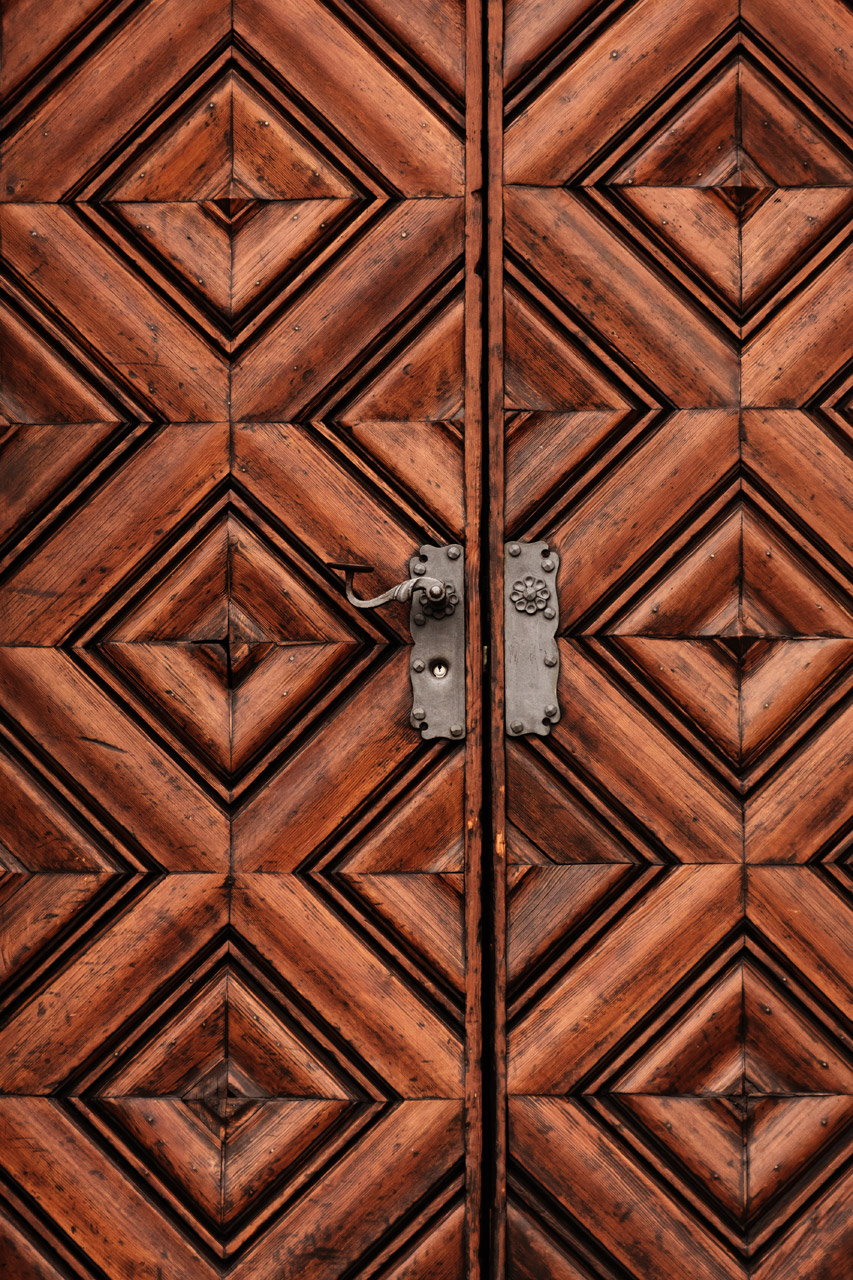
Heavy wooden door

Old heavy wooden brown door.